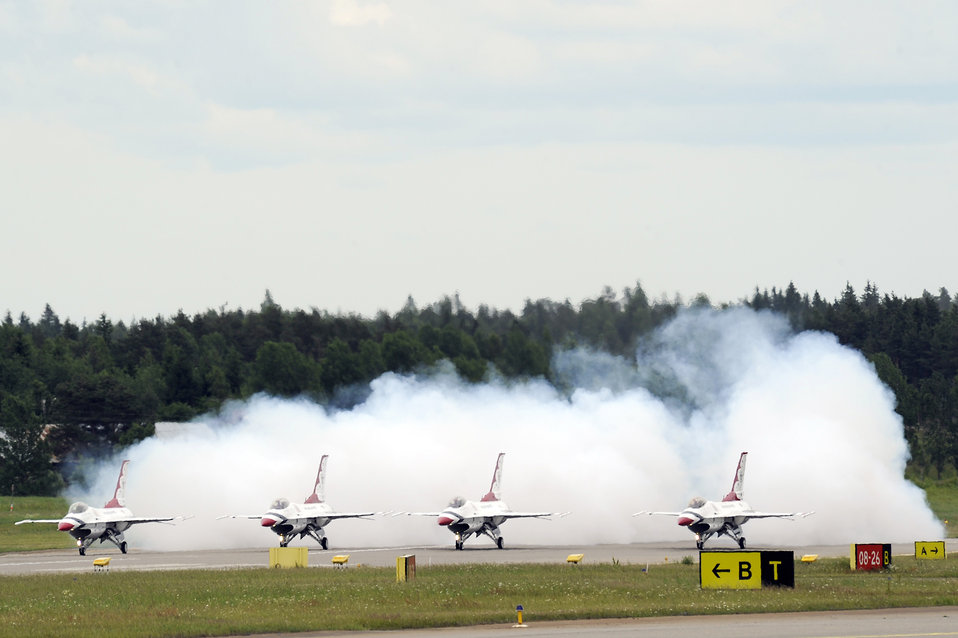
Thunderbirds in Finland

The Thunderbirds prepare for takeoff June 17, 2011, at Turku Airport, Finland.